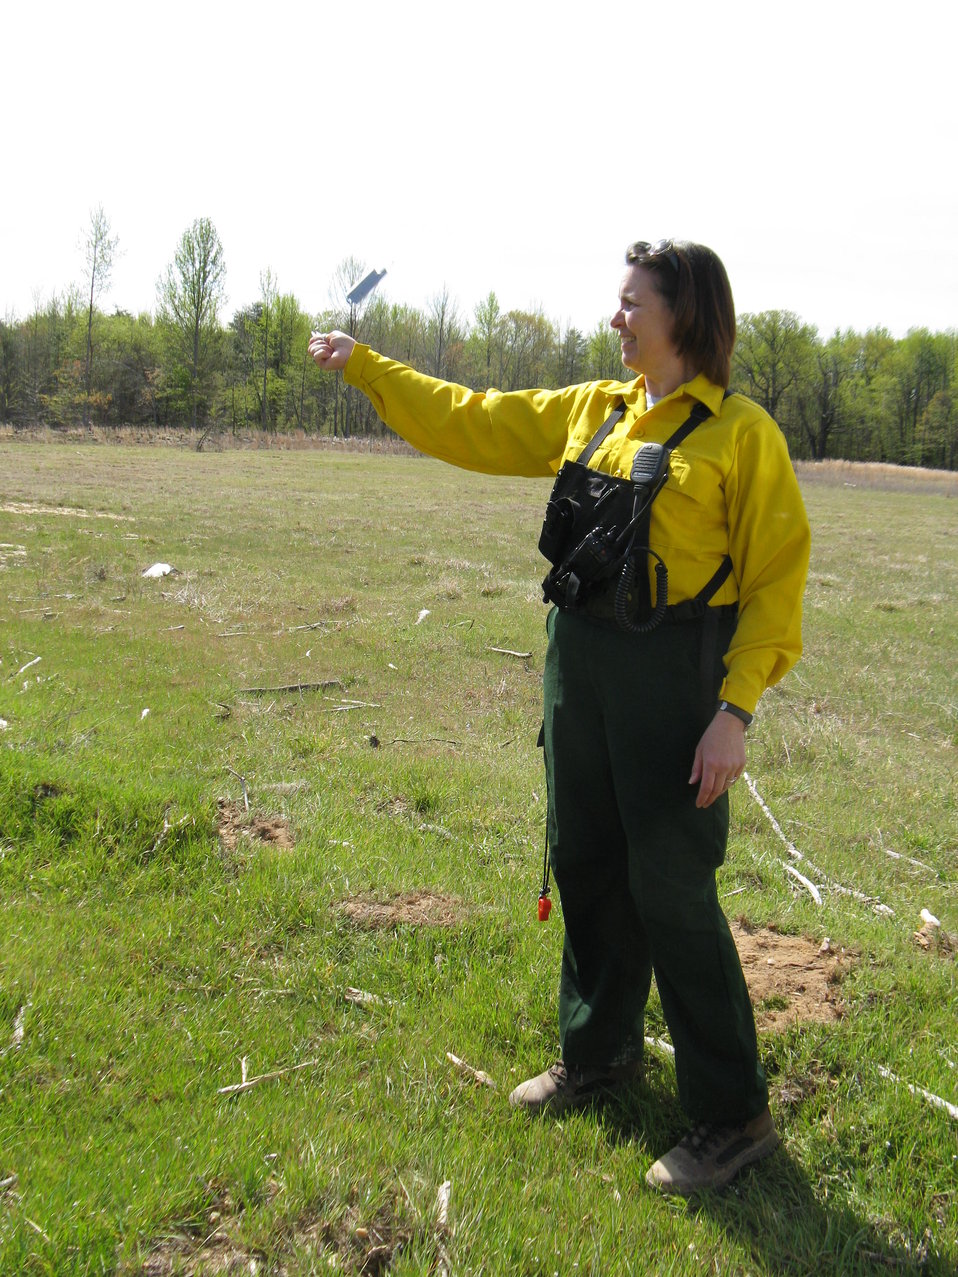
Spinning Weather

Laurel, Maryland, April 5, 2012: Mary Elliott of Blackwater National Wildlife Refuge swings a sling psychrometer to measure relative humidity for a controlled burn at Patuxent Research Refuge. Monitoring weather during controlled burns is important to make sure conditions continue to be favorable for safe and effective burns. This burn was done at Patuxent Research Refuge's Savannah Restoration Unit to increase refuge species and habitat diversity. Specifically, the refuge hoped to increase density and diversity of rare darkling beetles and forest floor plants.